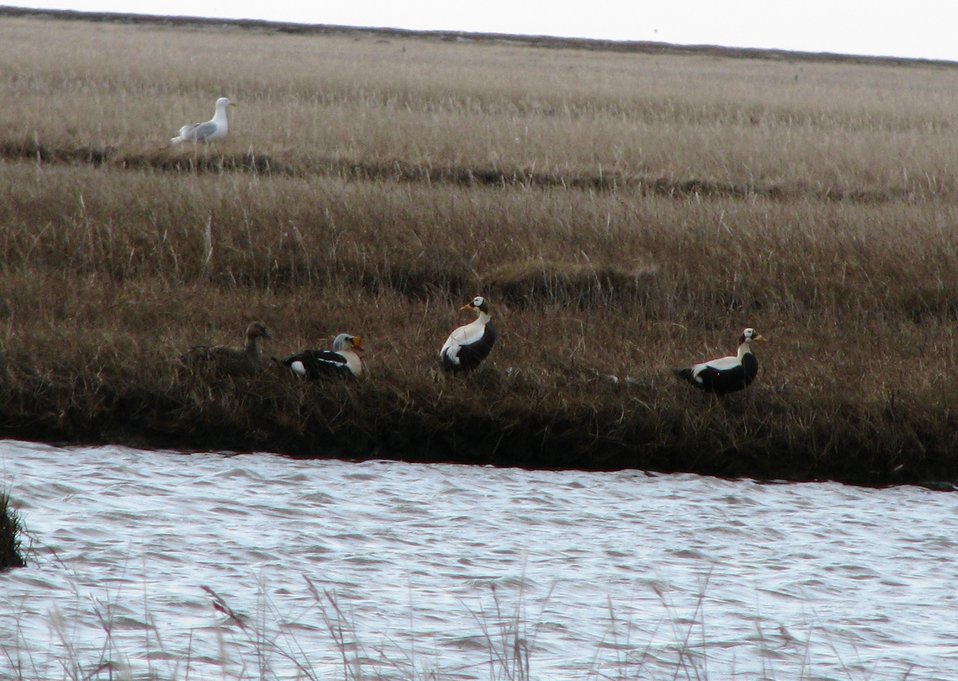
King Eider pair hanging out

Yukon Delta NWR